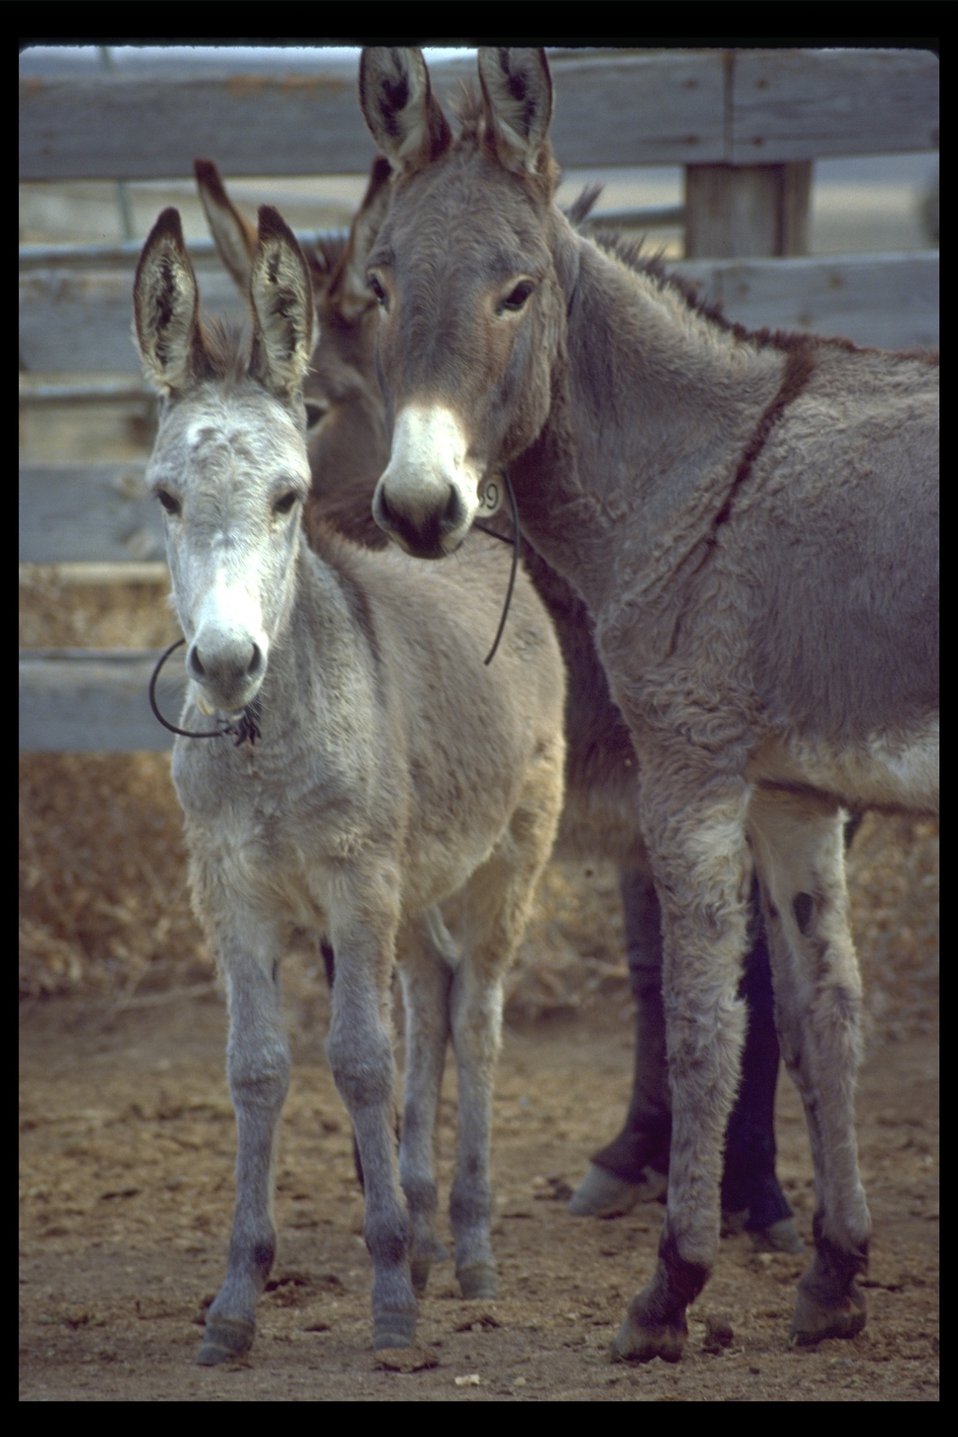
California Wild Burros await adoption at Burns Wild Horse Corral.